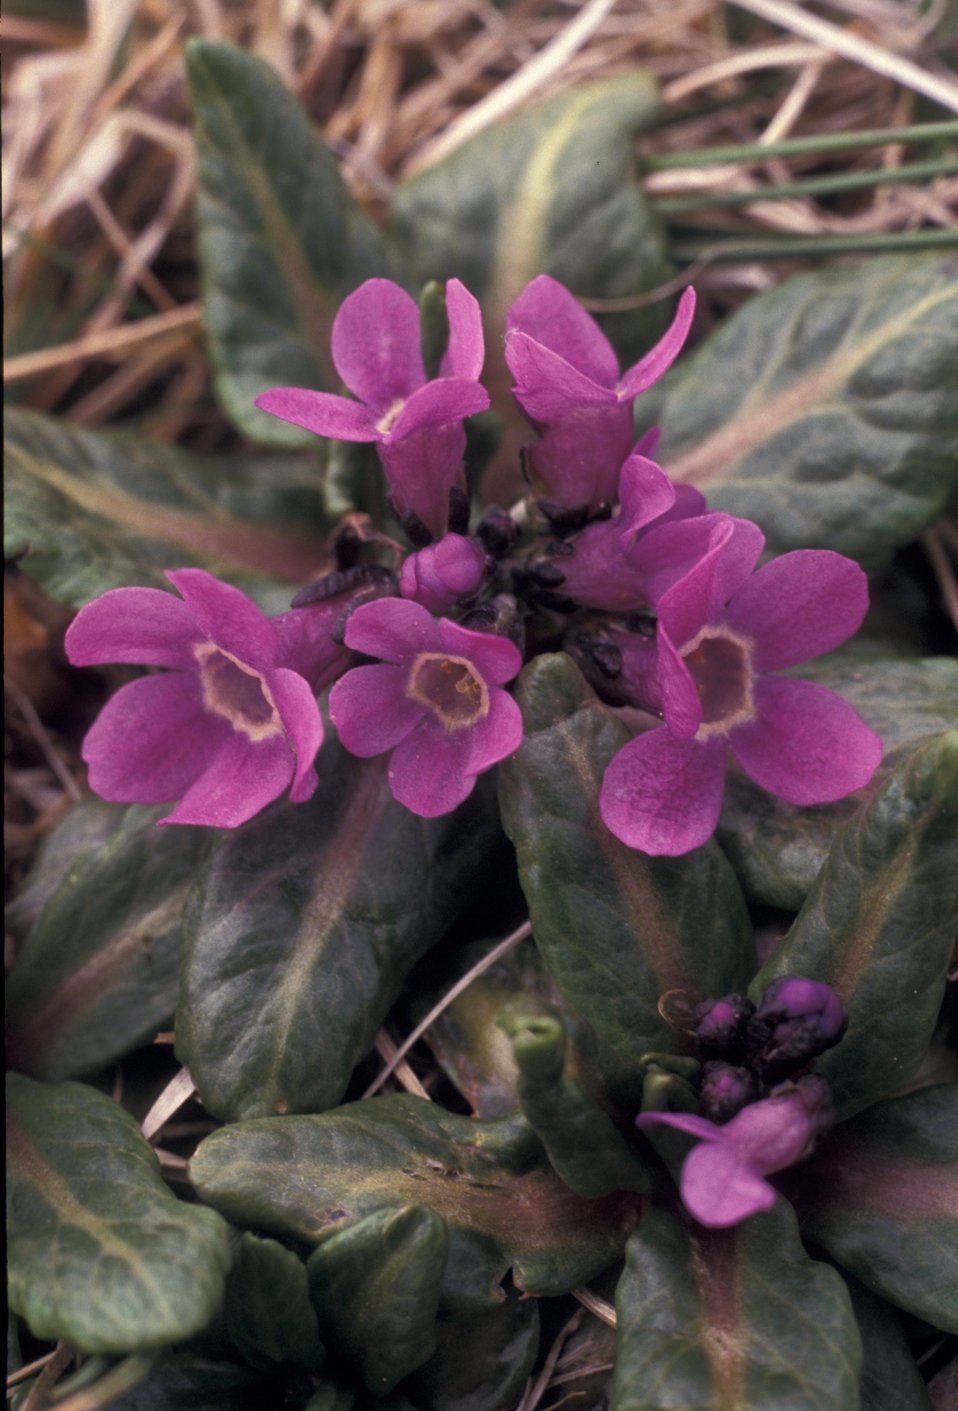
Primula, Alaska Maritime NWR

Native primula blooms on the Pribilof Islands in the Alaska Maritime National Wildlife Refuge (http://alaska.fws.gov/nwr/akmar/index.htm). (USFWS)